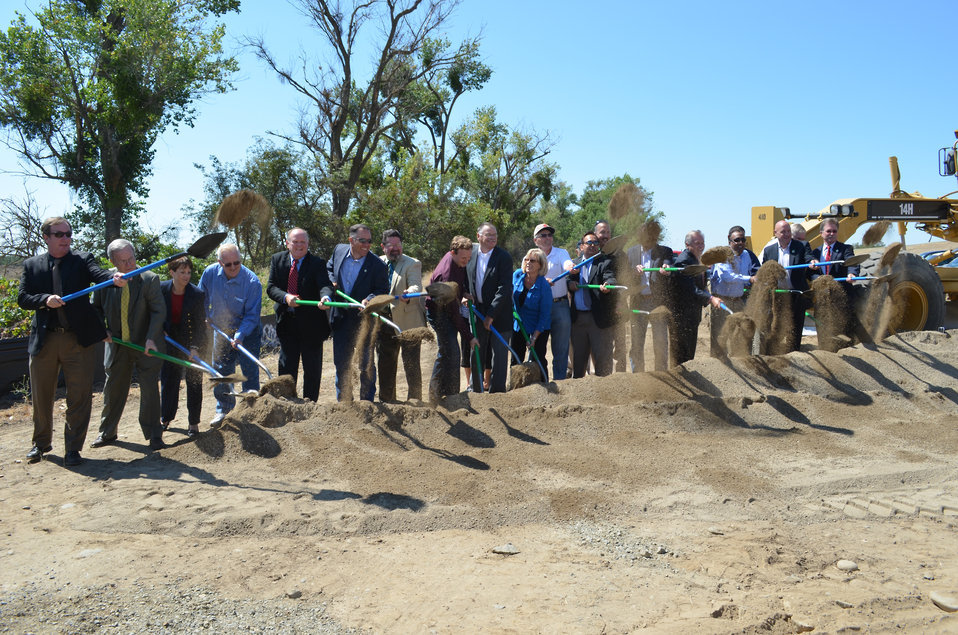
Levee improvements underway in Sutter County

Lee Bass (5th from the left), acting deputy for programs and project management for the U.S. Army Corps of Engineers Sacramento District, joins a long line of dignitaries for the ceremonial groundbreaking of a massive levee improvement project on the Feather River in Yuba City, Calif.